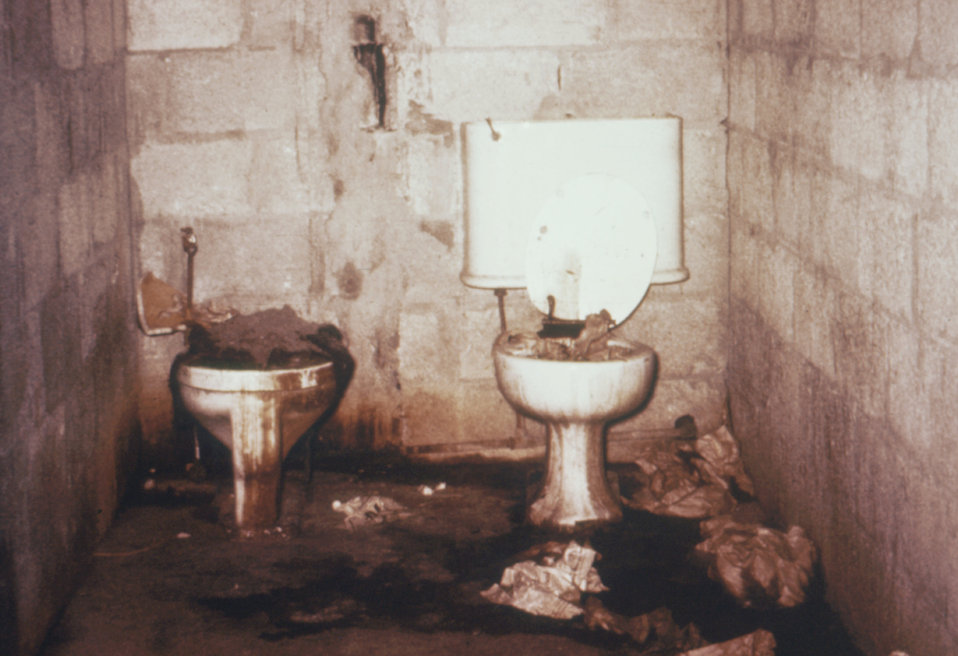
This was part of a series used to familiarize public health inspectors with sanitation conditions in migrant worker camps.